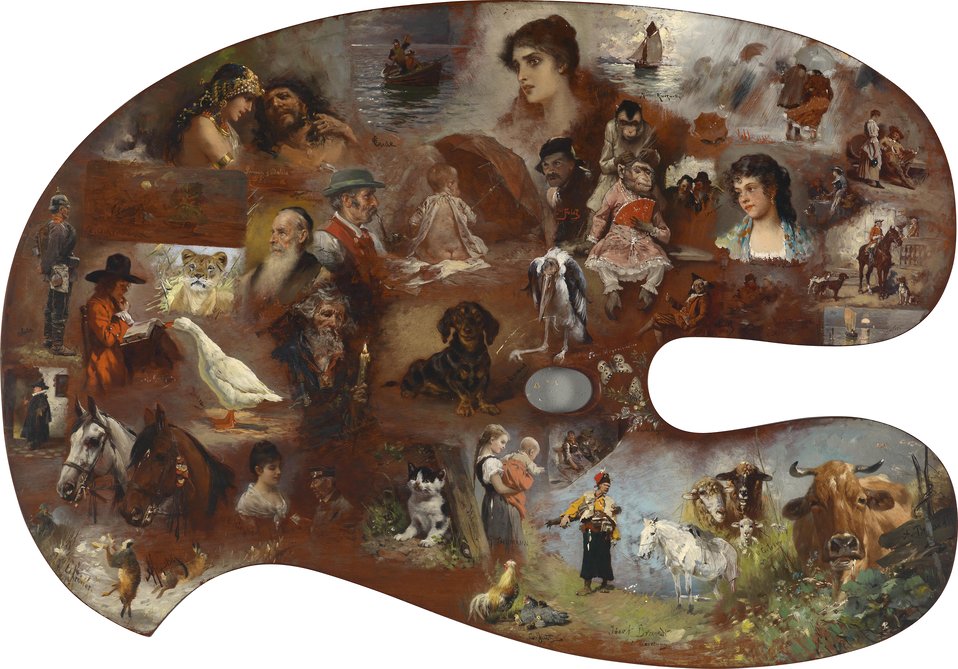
Deutsch: Malerpalette, beidseitig mit siebzig signierten und teilweise datierten Darstellungen deutscher, österreichischer, italienischer, spanischer norwegischer, schwedischer und polnischer Künstler bemalt, Öl auf Holz, ca. 68,5 x 47 cm; unter anderem sind folgende Künstler vertreten: Andreas und Oswald Achenbach, Eugen von Blaas, Joseph von Brandt, Ladislaus Czachorski, Franz von Defregger, Eduard von Grützner, Cecil von Haanen, Hugo Kauffmann, Isidor Kaufmann, Friedrich August von Kaulbach, Alfred Wierusz Kowalski, Gabriel von Max, Francisco Pradilla y Ortiz, Henryk Siemiradzky